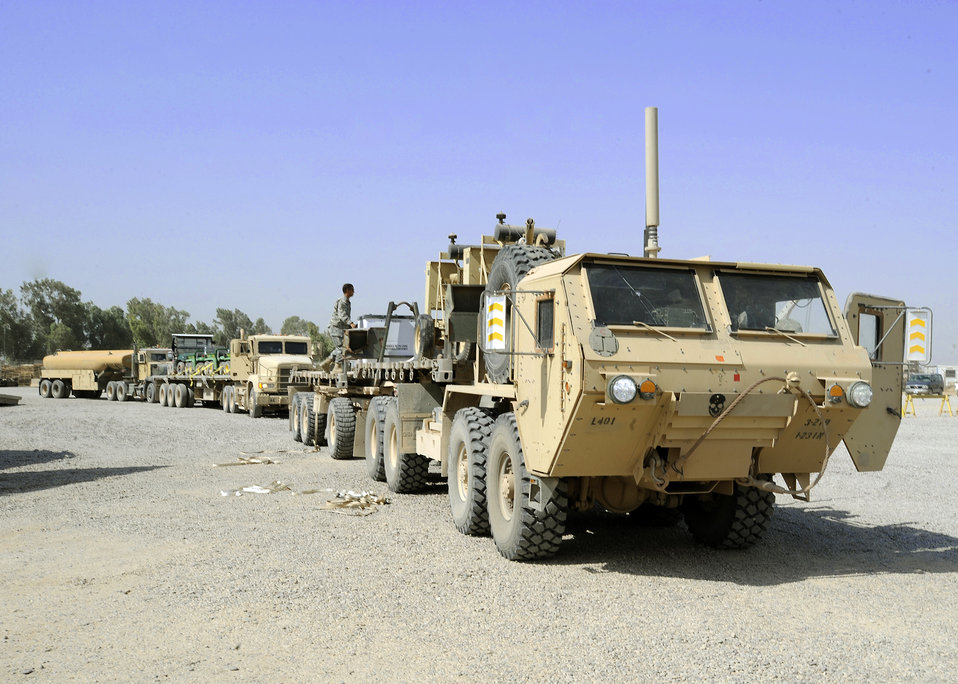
Airmen help clear the battlefield

A convoy of equipment arrives to be processed and inspected June 16, 2010, at the Redistribution Property Assistance Team Yard, Joint Base Balad, Iraq. . The RPAT yard is a joint venture operation for the Army and the Air Force. The Airmen and Soldiers here are scheduled to redeploy $17 billion in equipment over a six-month deployment.